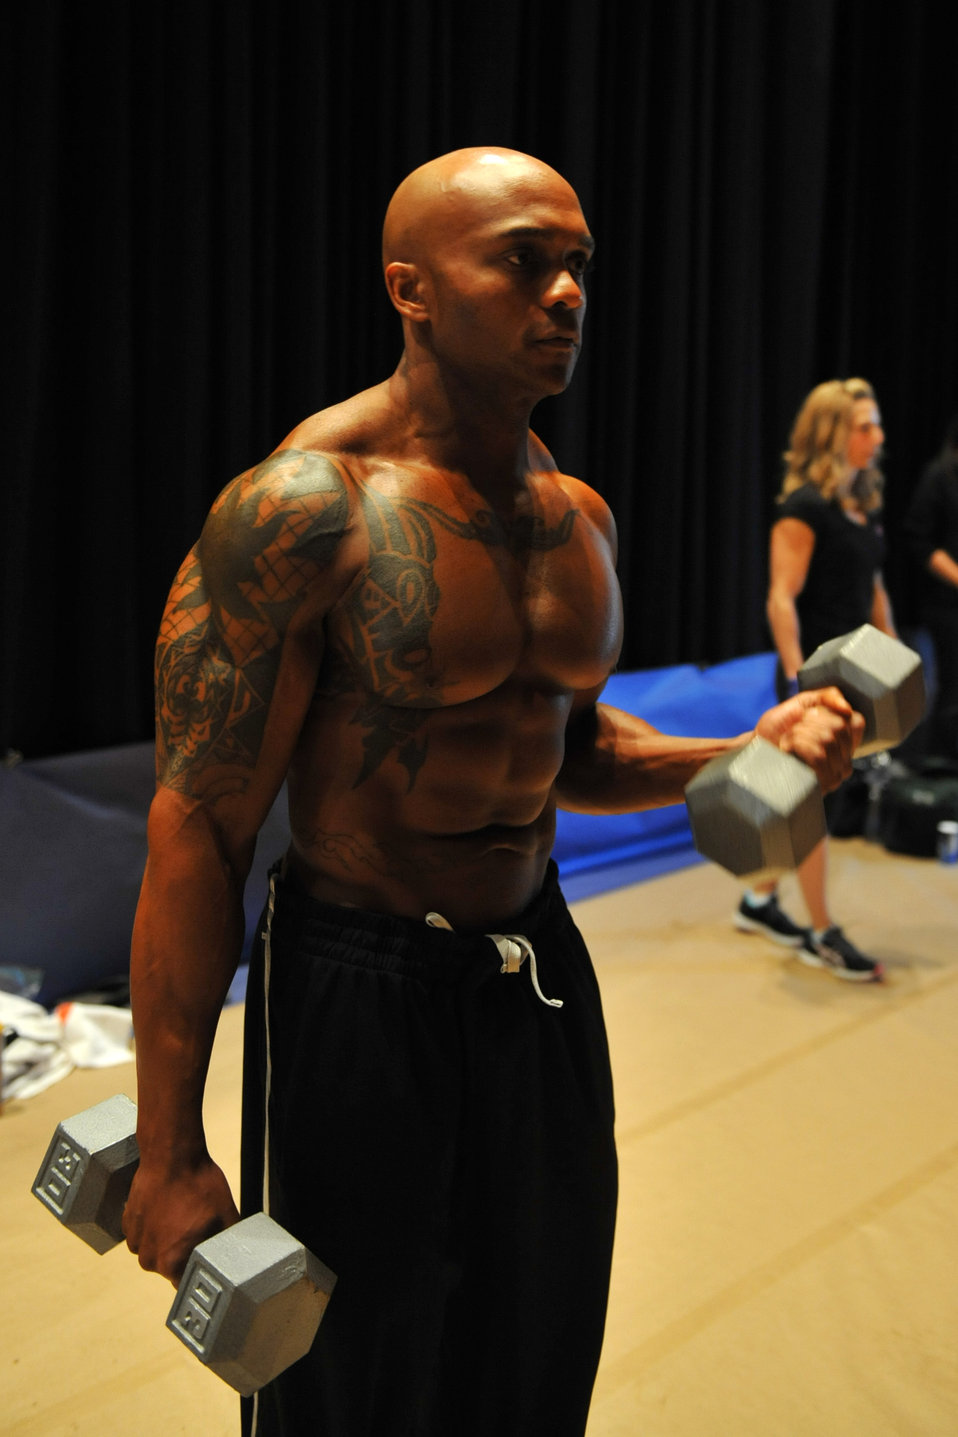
Curling for the pump

Master Sgt. LaJuan Fuller, 366th Civil Engineer Squadron first sergeant, lifts some small weights to warm up his muscles before his body building competition April 28, 2012, in Boise, Idaho. Fuller has participated in more than 18 competitions.